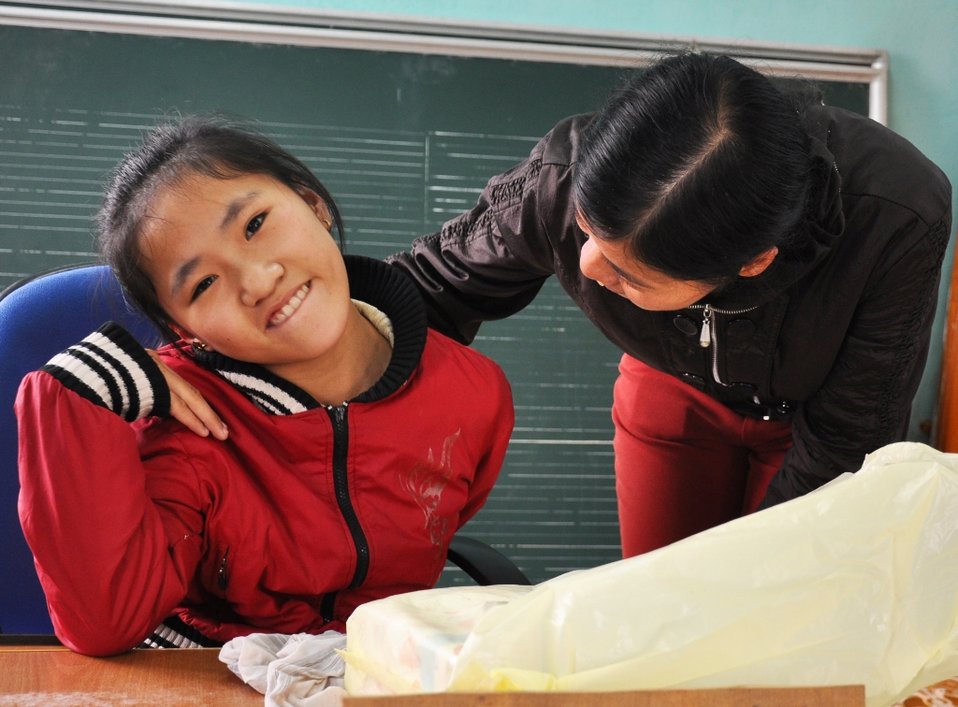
USAID assists persons with disabilities for greater inclusion in Vietnam